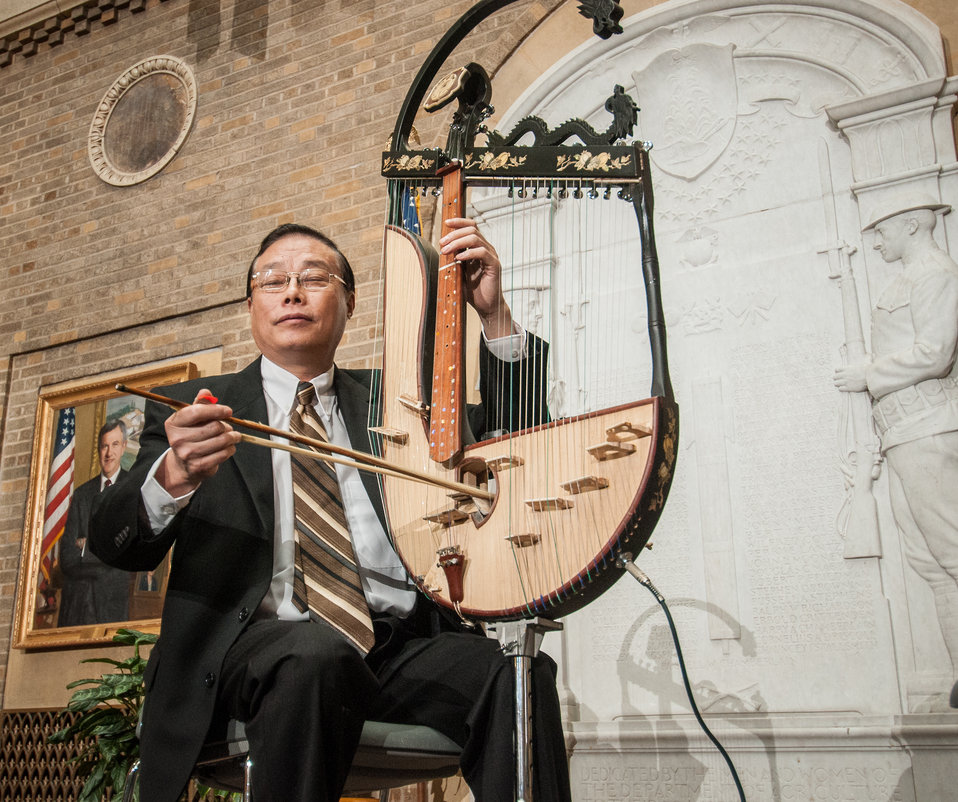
Washington Chinese Traditional Orchestra’s Mr. Wen gave a solo performance of “Fisherman Singing at Dusk” using an electric string instrument he invented that allows him to strum, pluck or bow using the three sets of strings on the one instrument, during the U.S. Department of Agriculture (USDA) Asian Pacific American Heritage Month Observance, at the USDA headquarters, Whitten Building patio, in Washington, D.C., on Thursday, May 23, 2013. This year’s theme is “Building leadership; Embracing the Cultural Values and Inclusions.”